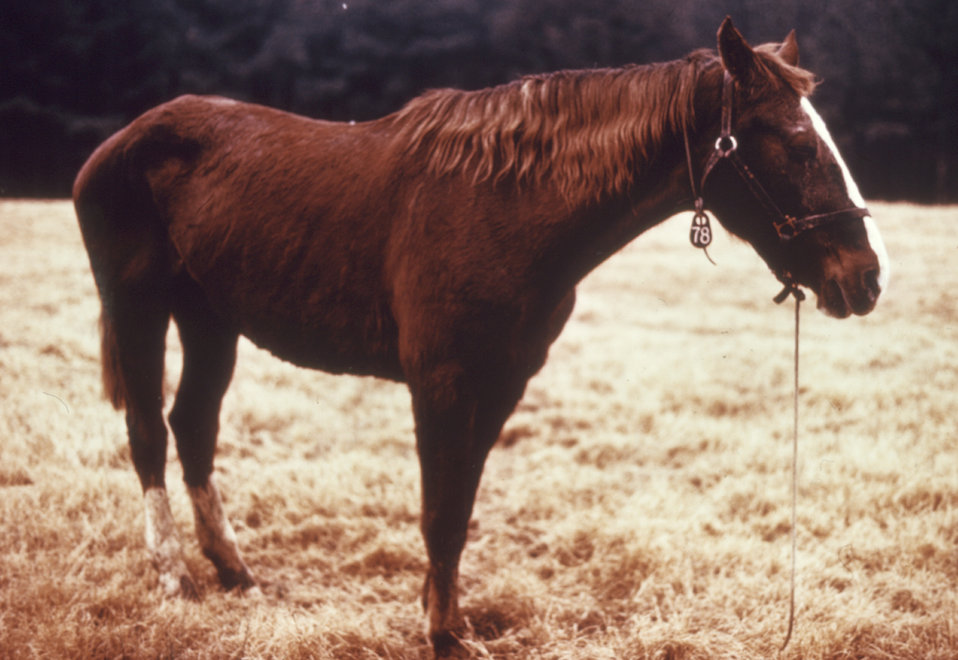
This horse was displaying symptoms of the arboviral disease Venezuelan equine encephalitis (VEE).